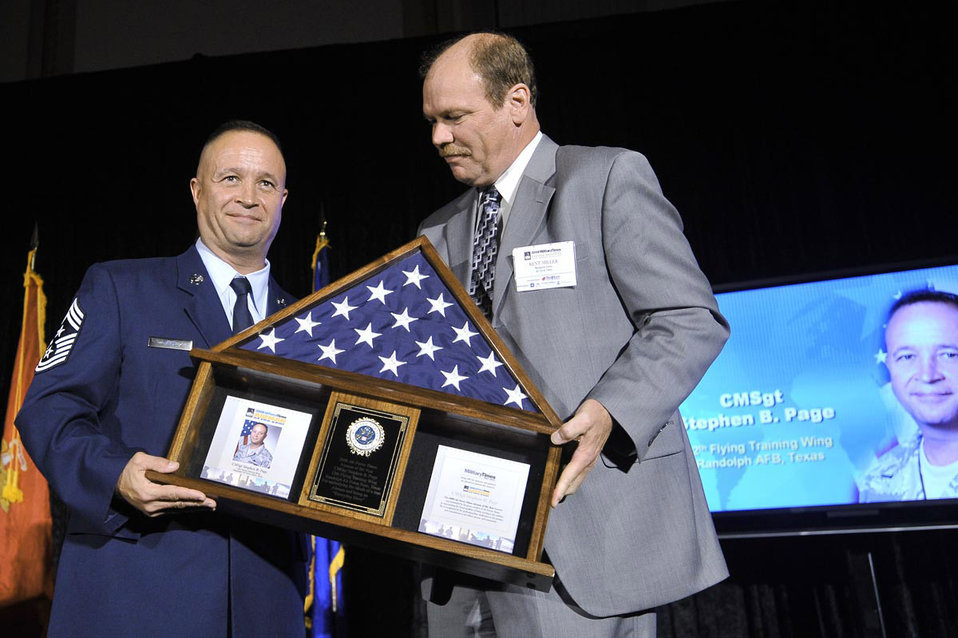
Chief receives newspaper's Airman of the Year award

Chief Master Sgt. Stephen Page accepts the Air Force Times newspaper's Airman of the Year award. Presenting the award is Kent Miller from the Military Times newspaper group at an awards reception July 30 in Washington, D.C.